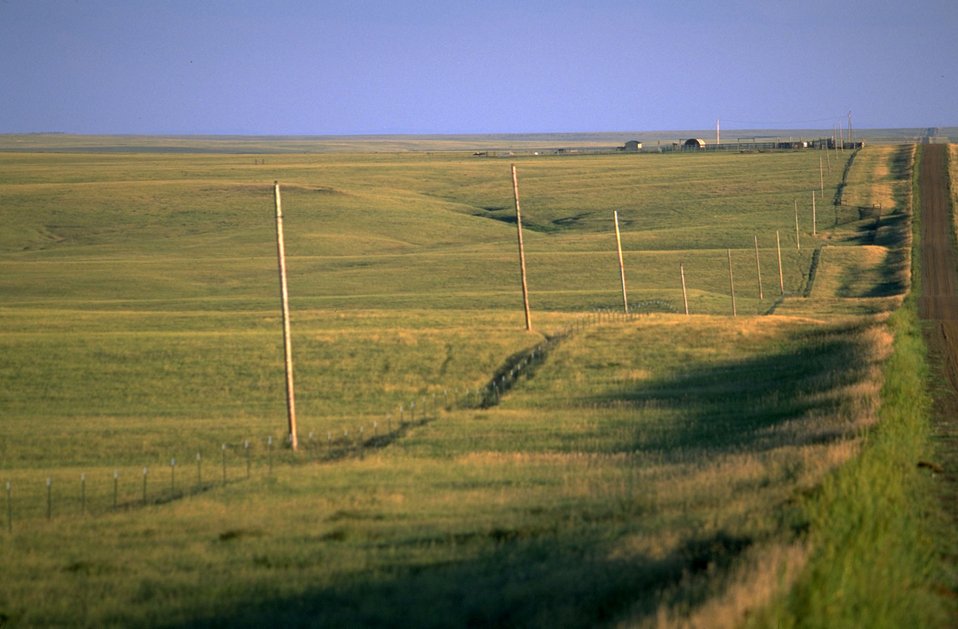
Powerline Right-of-Way 35 miles north of Belle Fourche